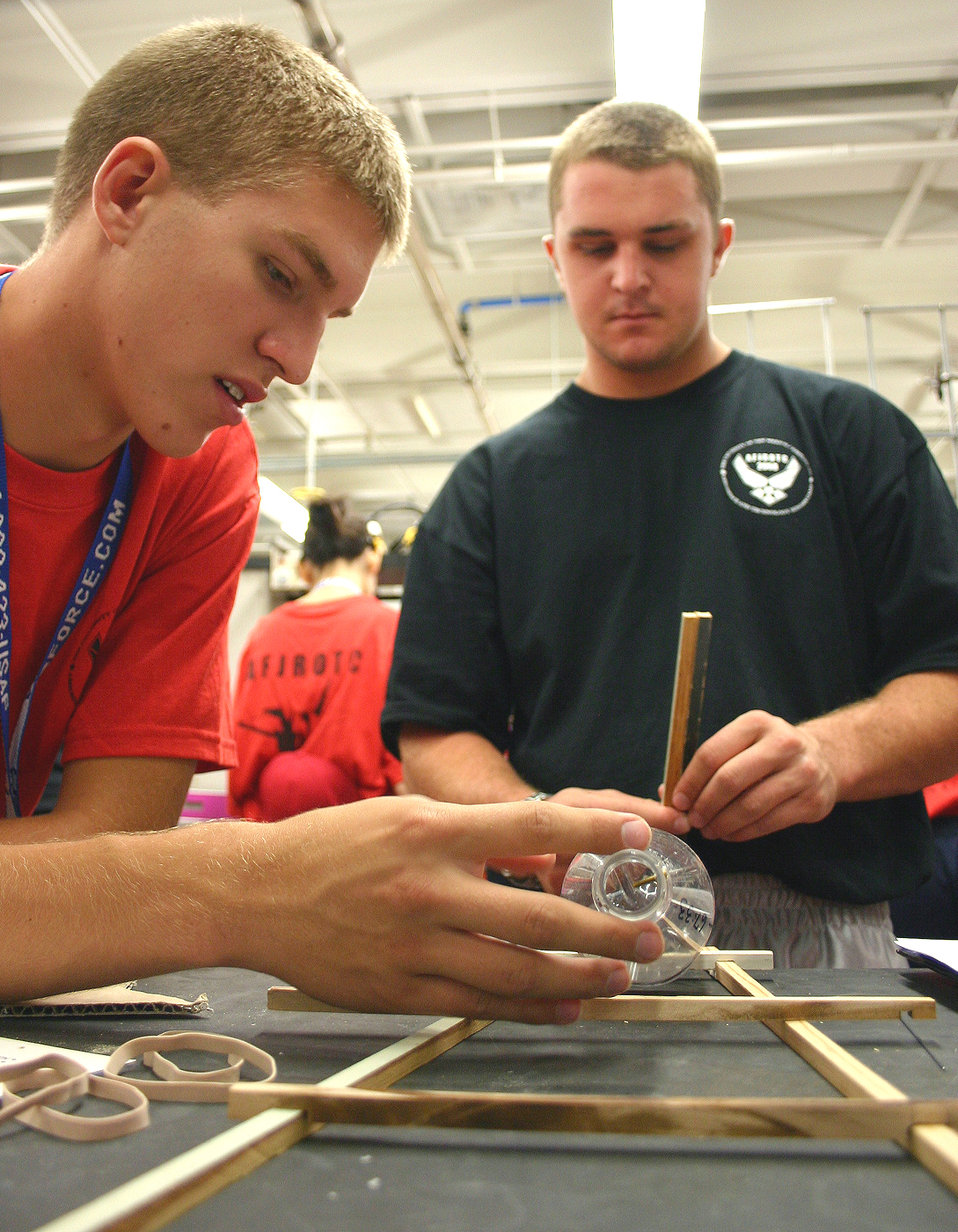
Top Junior ROTC cadets explore AF opportunities

Air Force Junior ROTC Cadets Ryan Moran from South Carolina and John Coleman from California piece together the framework of their rocket car July 29 during the 2008 Air Force Junior ROTC Aerospace and Technology Honor Camp at Albuquerque, N.M.